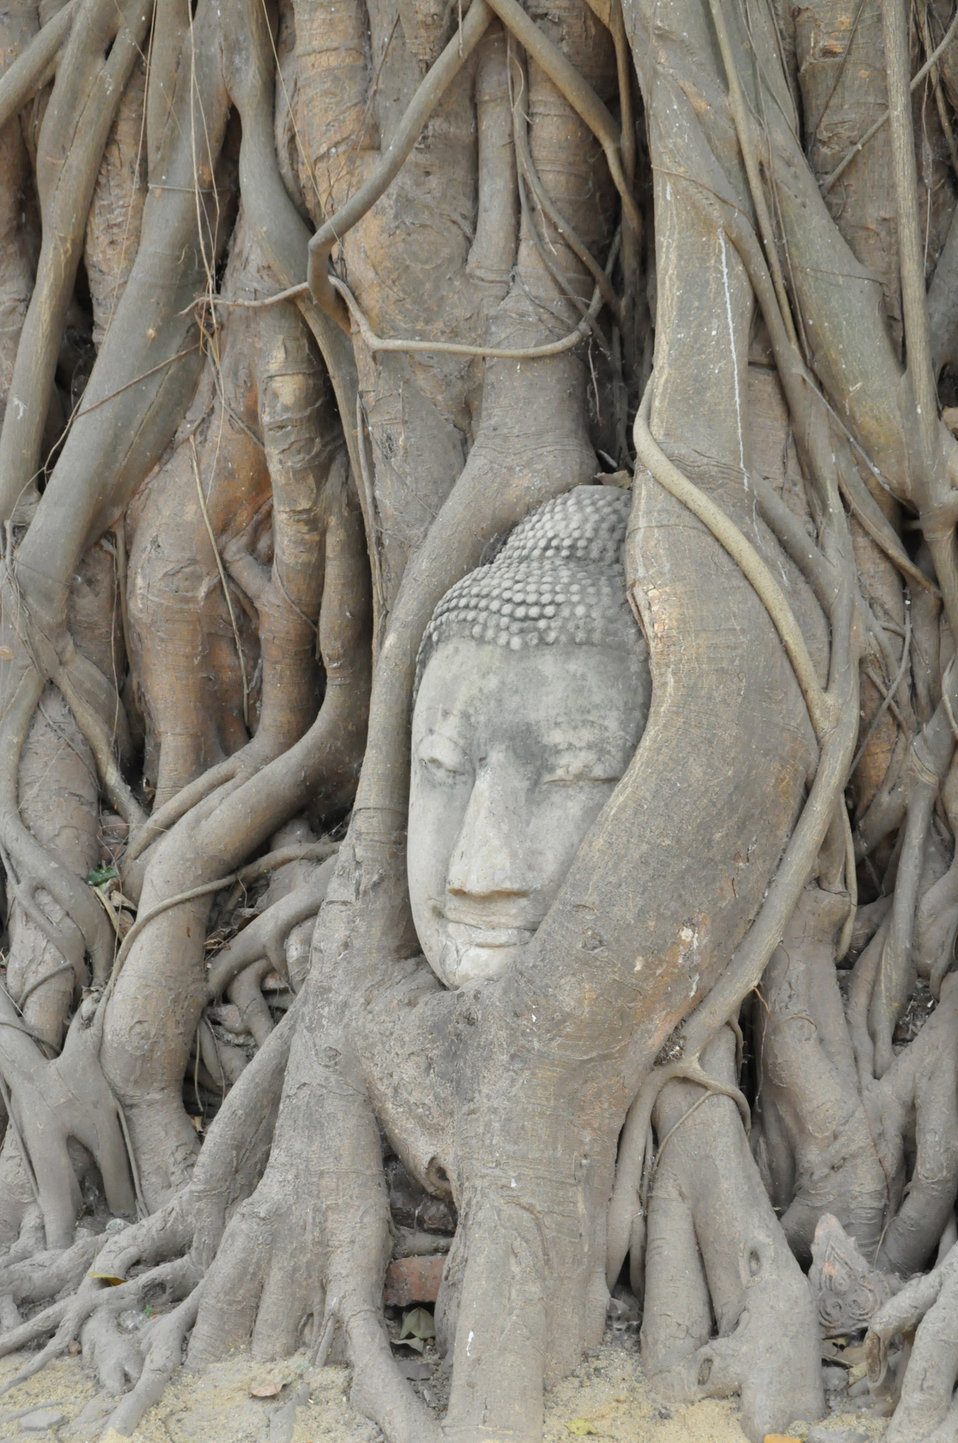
Head of buddha

Buddha head entwined with tree roots.